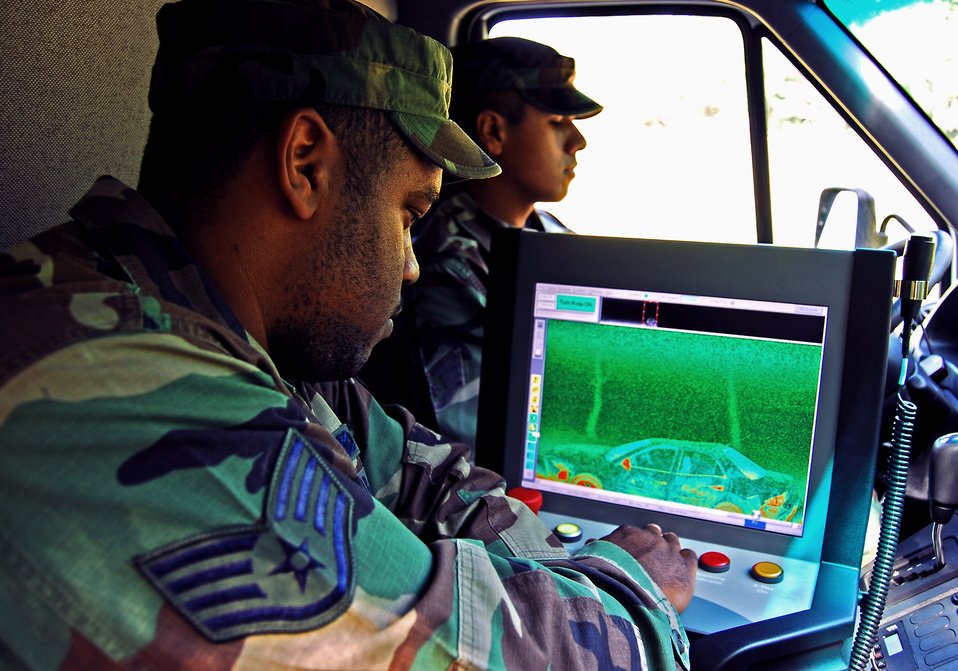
Backscatter technology leaves bad guys with no place to hide

Staff Sgt. Jonathan Hobbs uses a Z backscatter van to scan a suspect vehicle during a training exercise April 23 at Moody Air Force Base, Ga. The 820th Security Forces Group owns two of the $1.2 million vehicles, which interpret reflected X-rays to create highly detailed images of low-density materials such as explosives or drugs. Sergeant Hobbs is an 820th SFG sensor technician.